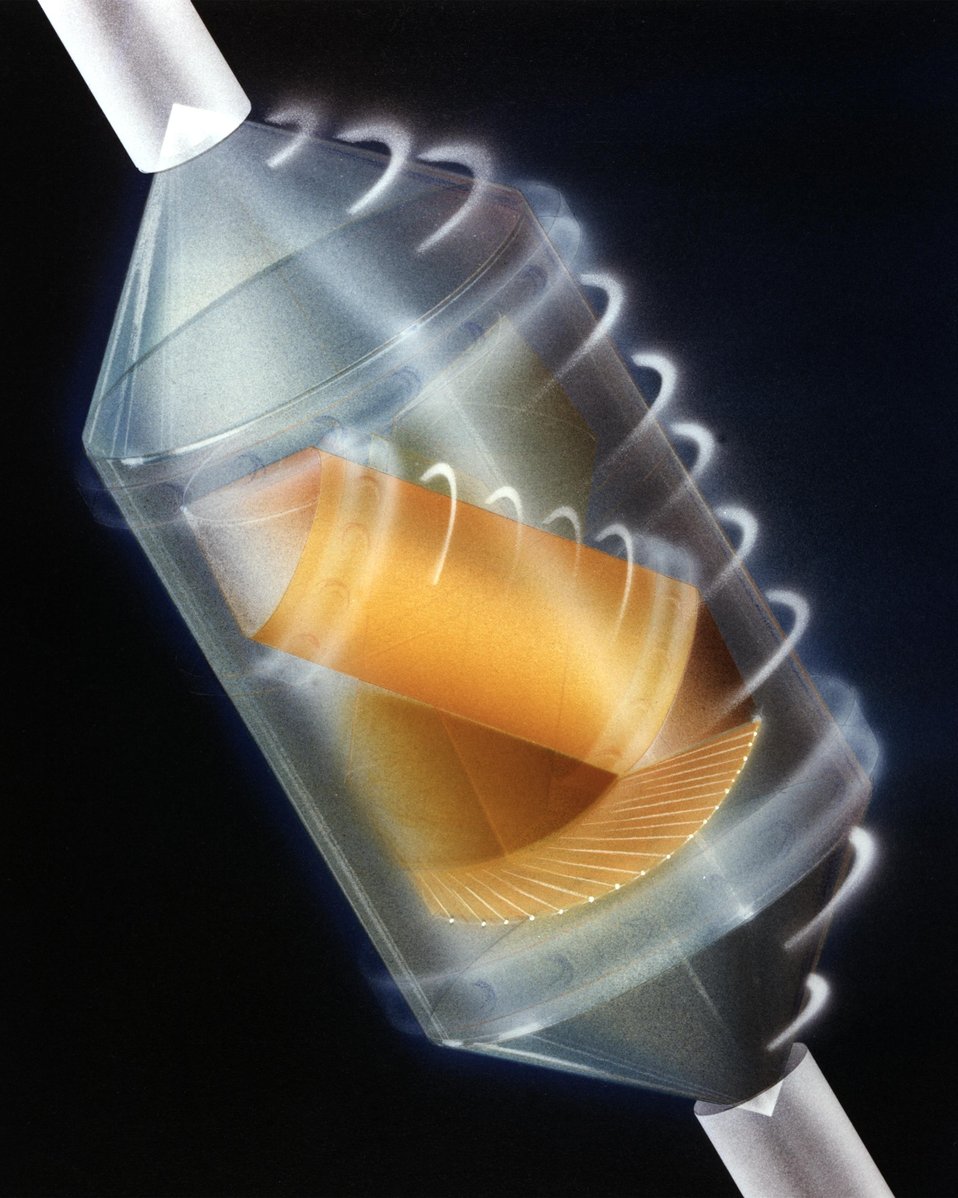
ARTIST'S IMPRESSION OF DOUBLE ROTATION NUCLEAR MAGNETIC RESONANCE (NMR).

NUCLEAR MAGNETIC RESONANCE (NMR) INVOLVES THE ABSORPTION AND EMISSION OF RADIO-FREQUENCY ENERGY BY NUCLEAR SPINS AS THEY OSCILLATE AND REORIENT IN THE PRESENCE OF INTERNAL AND EXTERNALLY APPLIED MAGNETIC FIELDS. SCIENTISTS AT LBL HAVE DEVELOPED A NEW TECHNIQUE, DOUBLE ROTATION NMR, TO STUDY THE INTERACTIONS BETWEEN ATOMS IN SOLID MATERIALS. THE DOUBLE ROTATION NMR WILL IMPROVE UP TO 100 TIMES THE ACCURACY WITH WHICH SCIENTISTS CAN DISTINGUISH BETWEEN DIFFERENT SPECIFIC LOCATIONS AND POSITIONS OF ATOMS IN A SOLID. IN NMR SPECTROSCOPY, A SAMPLE IS PLACED IN A MAGNETIC FIELD, FORCING THE SPINS INTO ALIGNMENT. THE SAMPLE IS SUBJECTED TO RADIOWAVE PULSES AND THE NUCLEI ABSORBS ENERGY FROM THEM. THE NUCLEI TOPPLE OUT OF ALIGNMENT WITH THE FIELD, BUT THEN LINE UP AGAIN AS THEY LOSE THE ABSORBED ENERGY. BY MEASURING THE SPECIFIC RADIO FREQUENCIES EMITTED BY THE NUCLEI, AND THE RATE AT WHICH REALIGNMENTS OCCURS, SCIENTISTS GAIN DETAILED INFORMATION ON THE ATOMIC STRUCTURE AND MOTION OF THE SAMPLE.